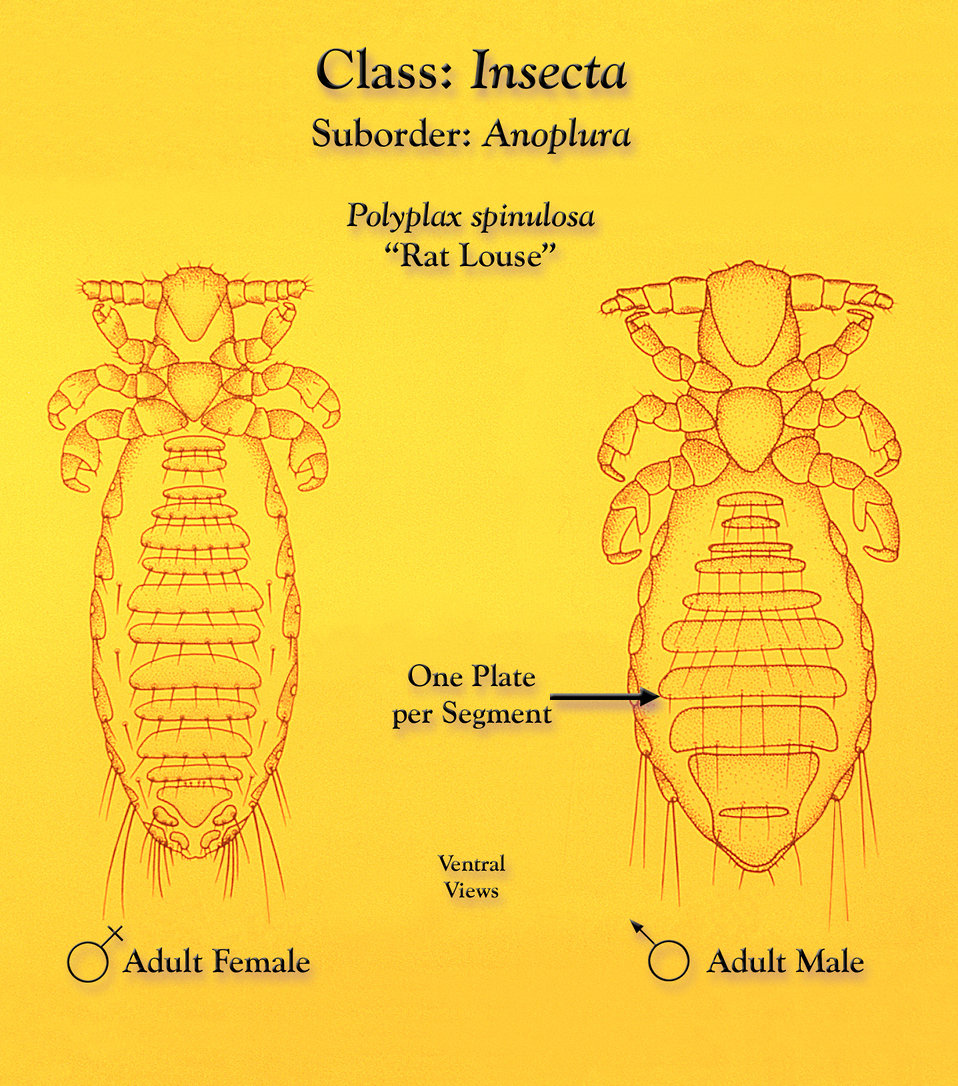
This illustration depicts a female (Lt) and male (Rt) 'rat louse', Polyplax spinulosa from a ventral view.